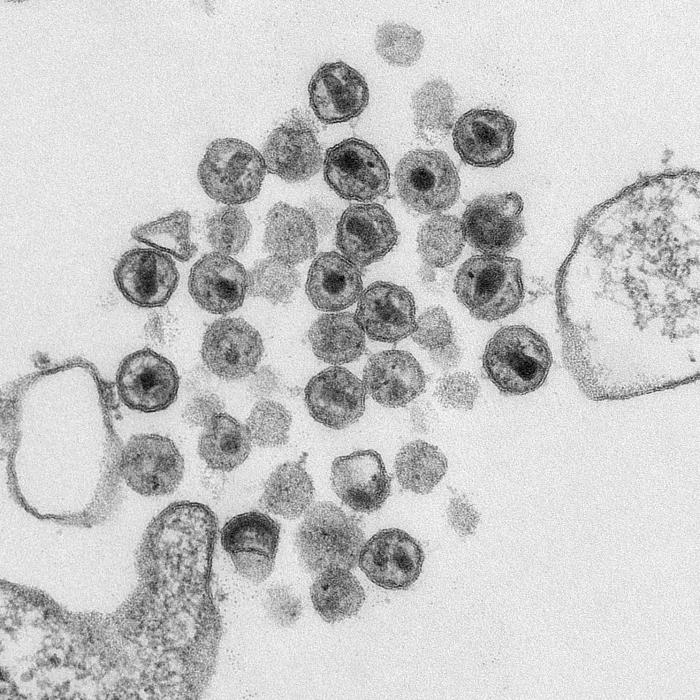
This thin section transmission electron micrograph (TEM) depicts numerous virions revealed in a preparation of HIV (human immunodeficiency virus).